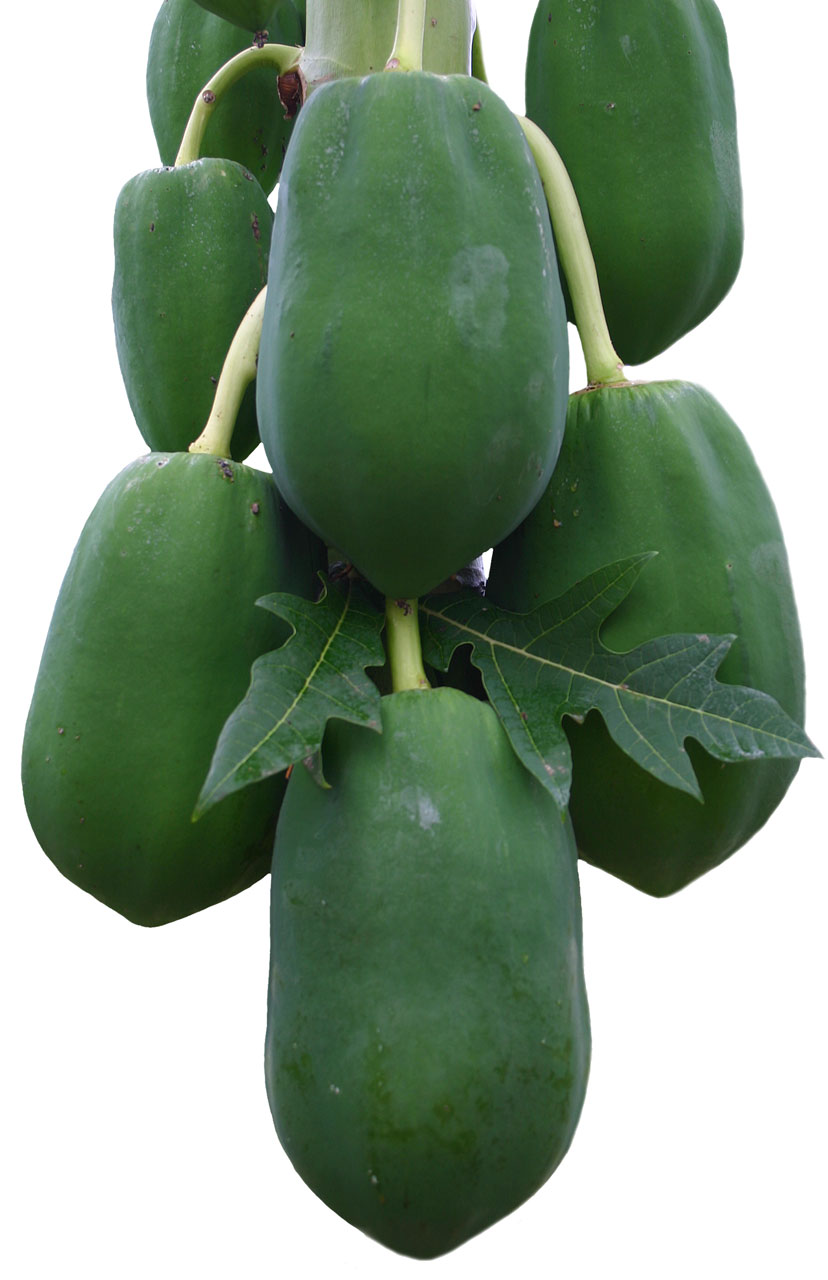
Papayas on white

Unripe papayas on tree.